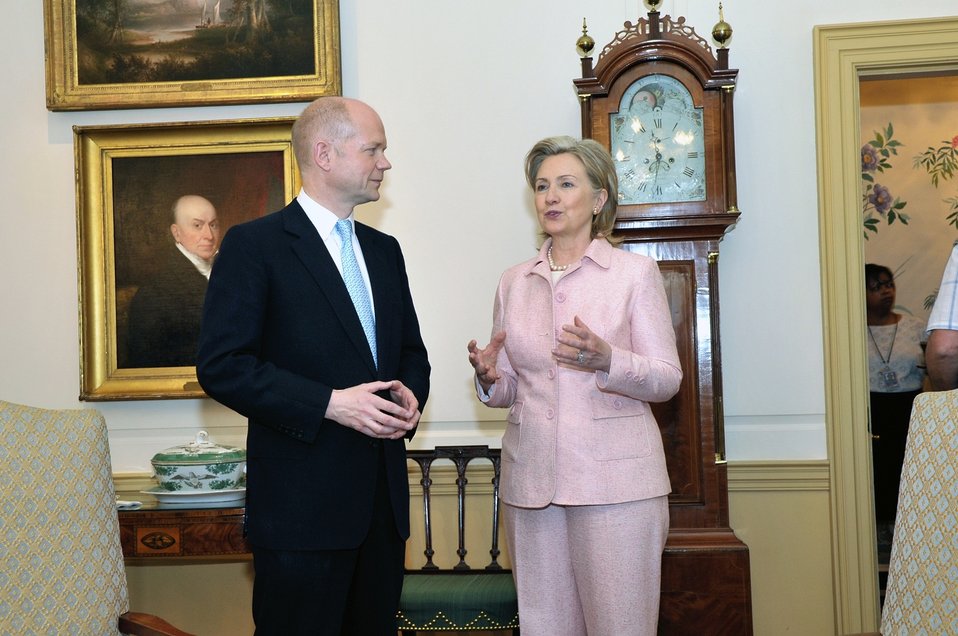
Secretary Clinton Holds a Bilateral With British Foreign Secretary William Hague

U.S. Secretary of State Hillary Rodham Clinton holds a bilateral meeting with British Foreign Secretary William Hague in the Madison Room at the U.S. Department of State, Washington, D.C., May 14, 2010.